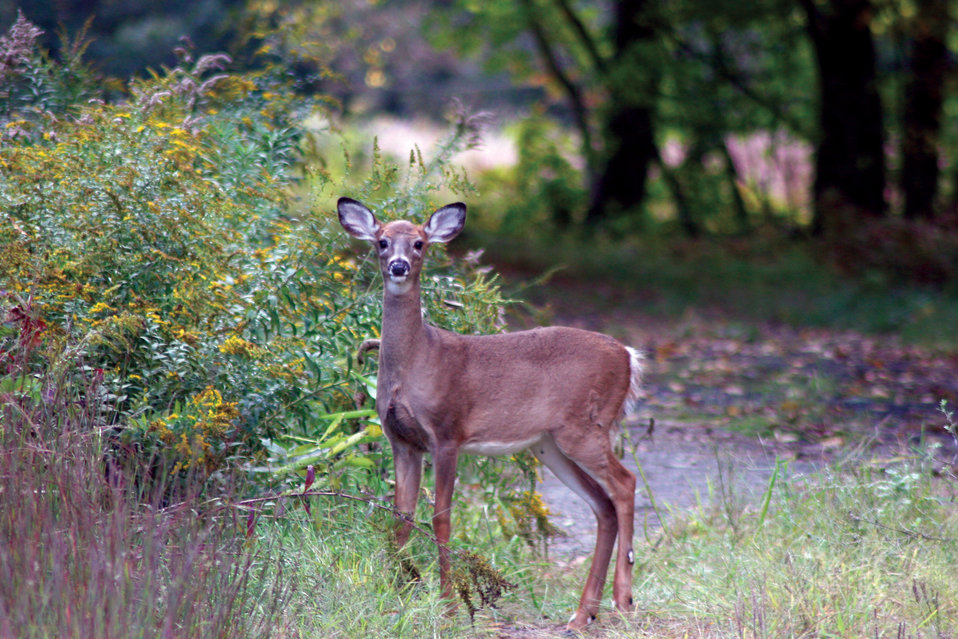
Photo of the Week - White-tailed yearling (NH)

Photo of the Week - 11/28/11

White-tailed yearling at Great Bay National Wildlife Refuge in Newington, NH.